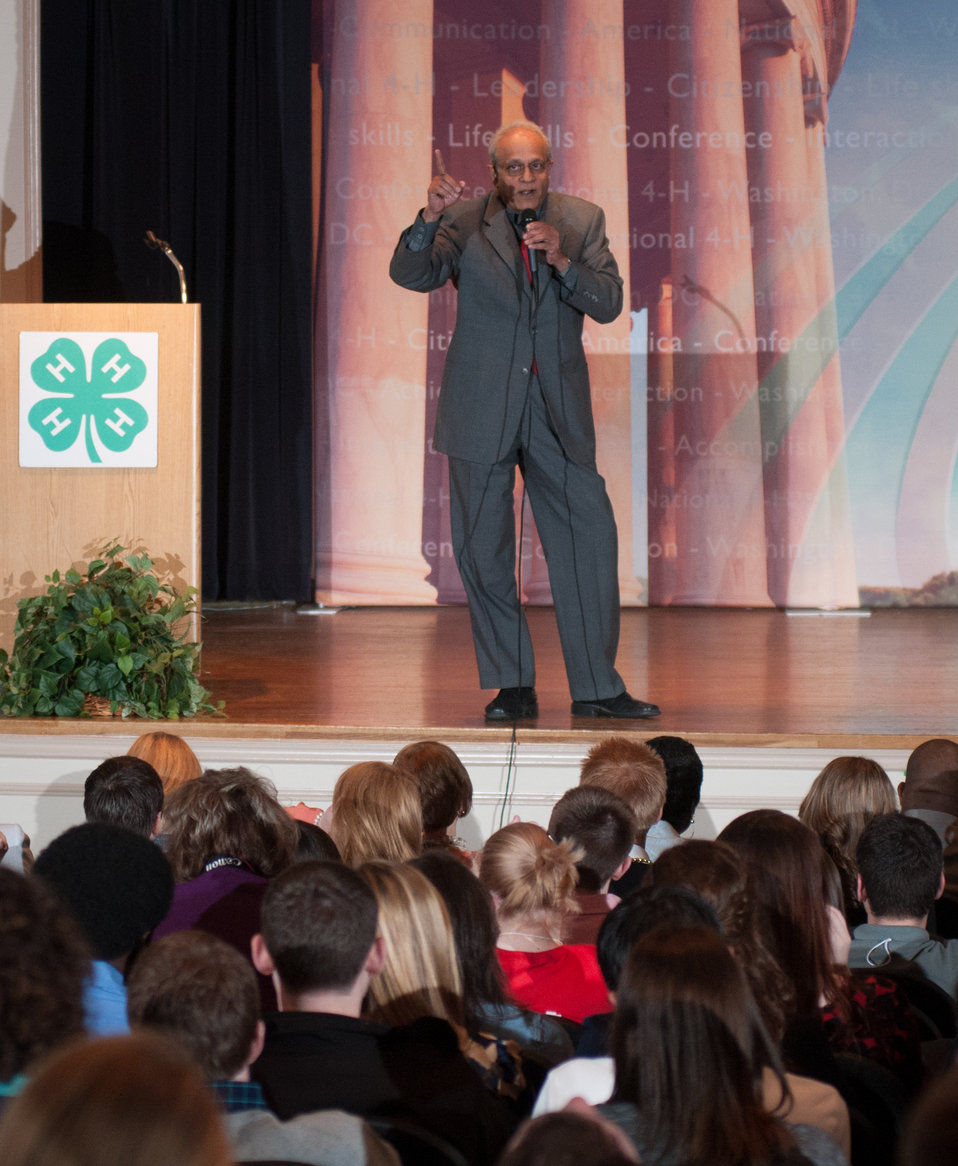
U.S. Department of Agriculture (USDA National Institute of Food and Agriculture Director Dr. Sonny Ramaswamy opened his address about to approximately 300 4-H youth members of the 2013 National 4-H Conference, with a challenge question: “What is the most daunting challenge facing humanity?” The resulting address lead to information about educational opportunities. He closed with a quote from philosopher Confucius: “Find a job you love and you will never have to work again.” on Monday, April 8, 2013 in Chevy Chase, MD. The youth delegates are in grades 10-12 (15-19 years old). The purpose of the conference is to 1) engage 4-H youth in personal development experiences that will increase knowledge, resources, and skills; 2) discuss topics affecting youth and 4-H programming nationwide; and 3) empower and mobilize 4-H youth to create positive social change in their communities in a meaningful and genuine way. The conference also reinforces the rich history of 4-H and its valuable tie to USDA, Cooperative Extension and the Land-Grant University System.